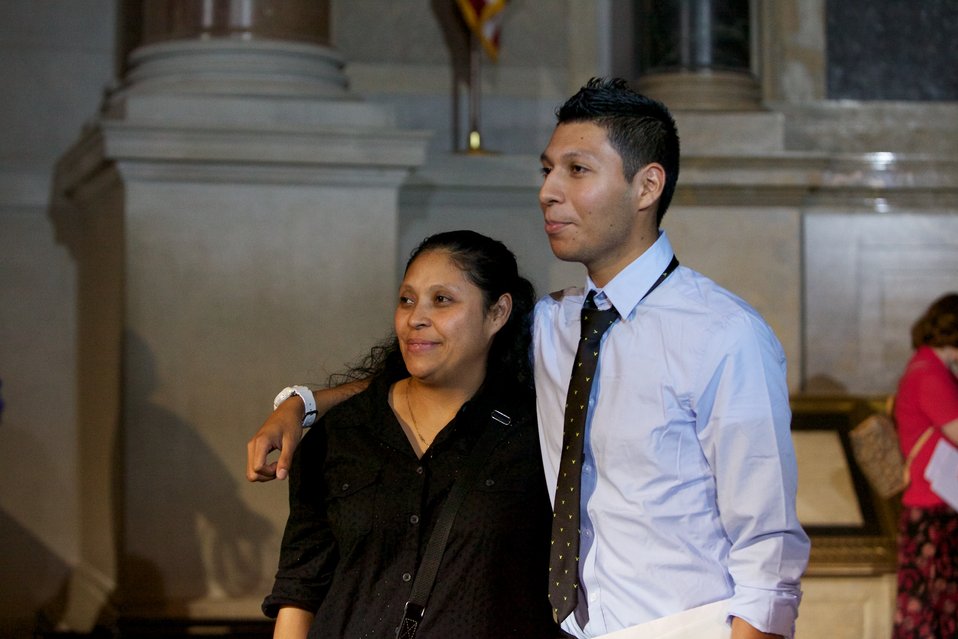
Naturalization Ceremony with Michelle Obama